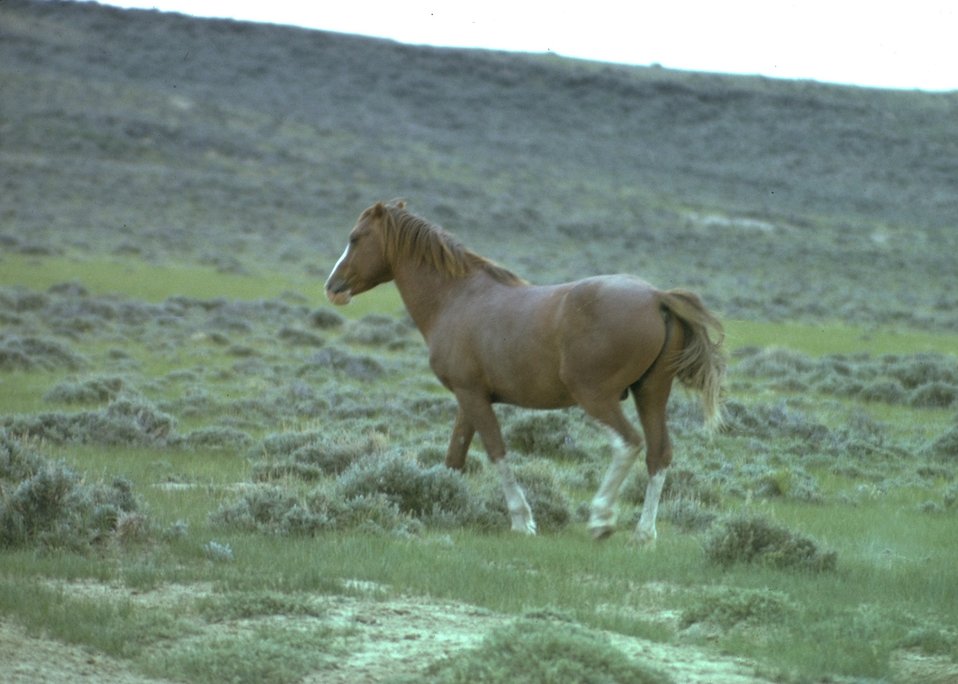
Wild horses.